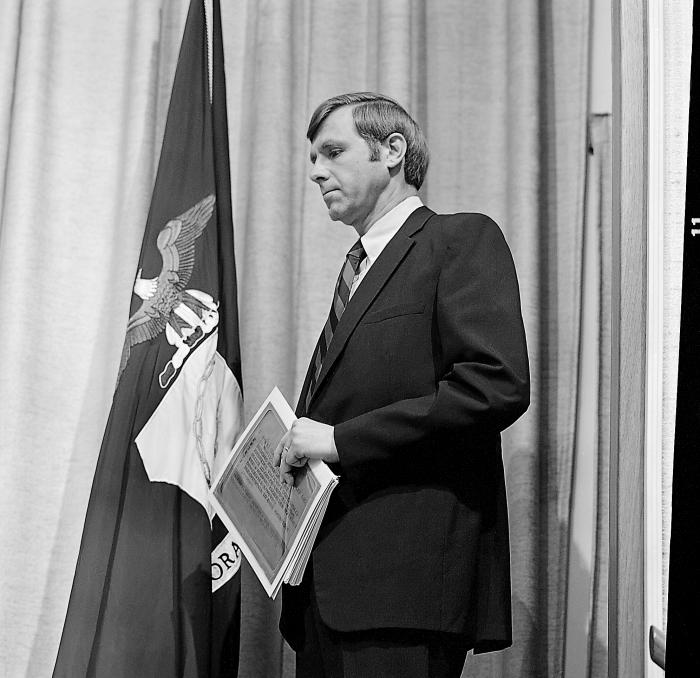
This April 5, 1977 photograph depicts former CDC Director William H. Foege, M.D., M.P.H., while he was standing at a ceremony in which he was named Director-Designate of the Centers for Disease Control by DHEW Secretary Joseph A. Califano.